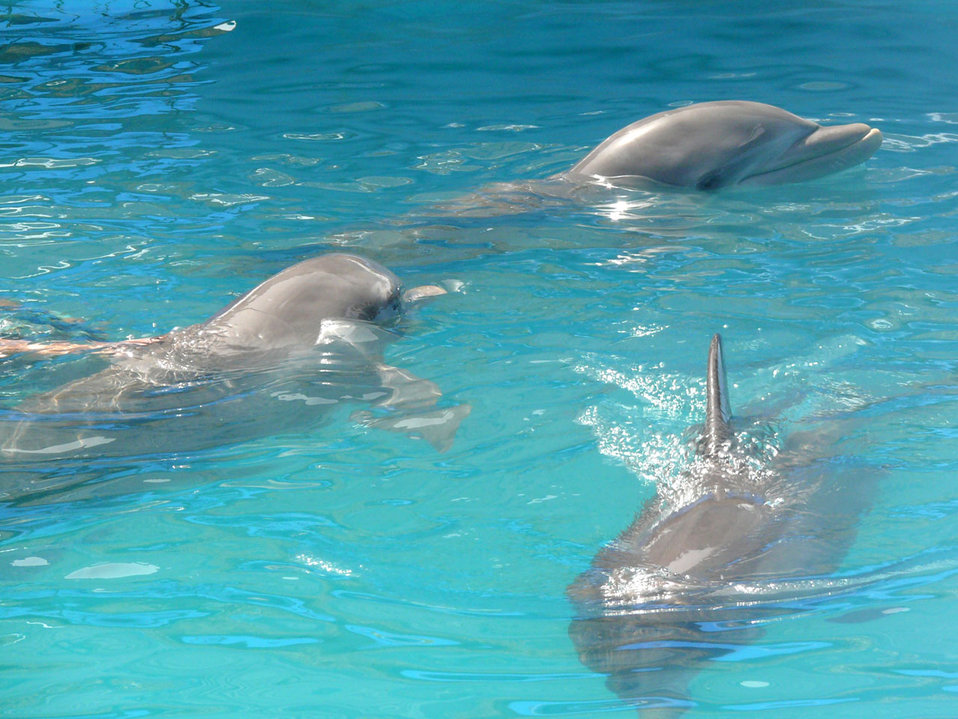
Dolphins

Three dolphins in the pool.